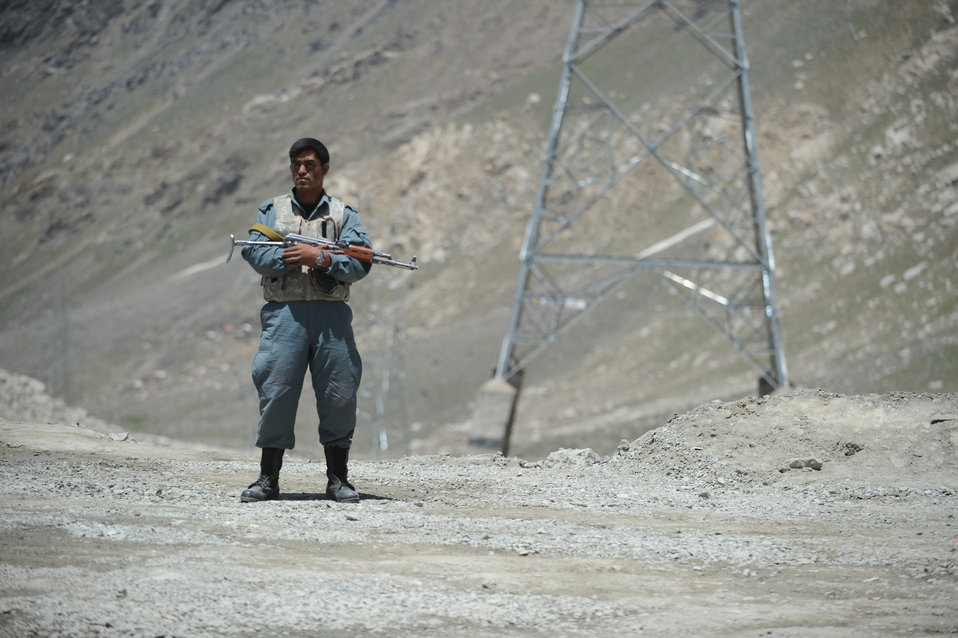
Security at the North entrance of the Salang Tunnel on the border of Parwan and Baghlan Provinces, Afghanistan, on Wednesday, June 15, 2011. (S.K.Vemmer/Department of State)